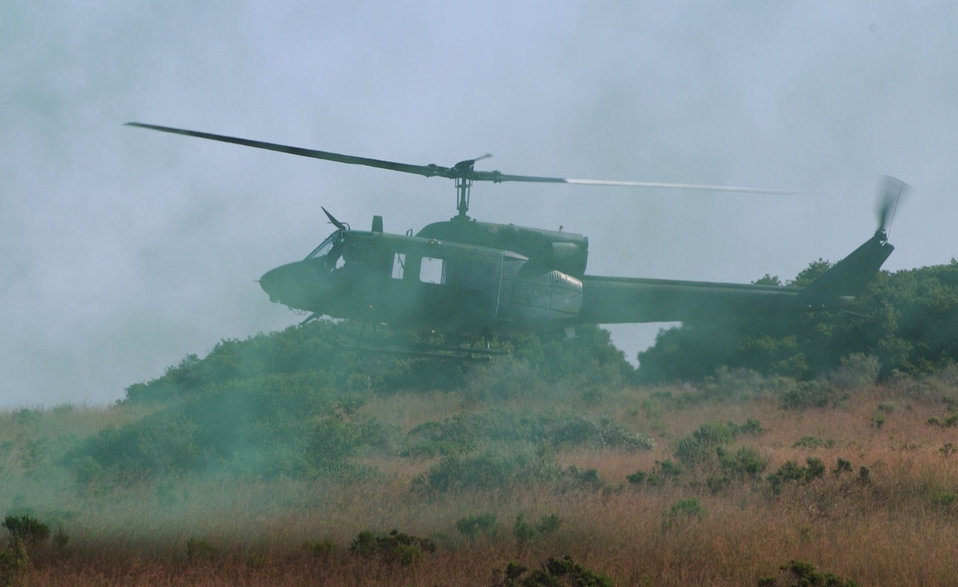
Your chariot awaits

VANDENBERG AIR FORCE BASE, Calif. -- A UH-1N helicopter lands to recover a payload of 21st Space Wing Security Forces team members during the security forces tactics competition for Guardian Challenge here May 4. Guardian Challenge, the world's premier space and missile competition, is a four-day event held annually. It tests the wartime readiness of Air Force Space Command's Airmen in spacelift, ICBM operations, communications, maintenance, helicopter operations, security forces and chef food preparation.